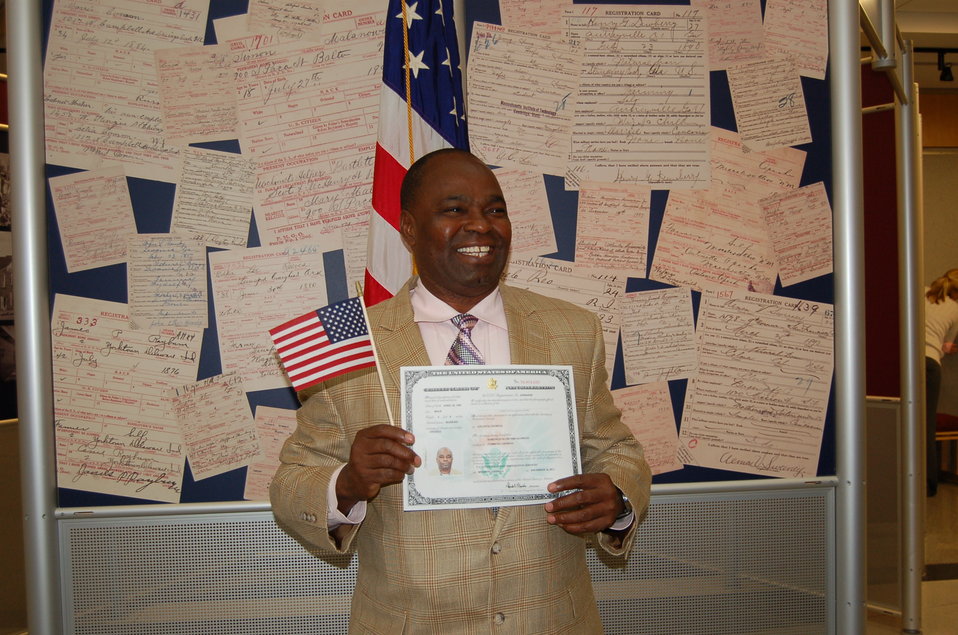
New Citizens